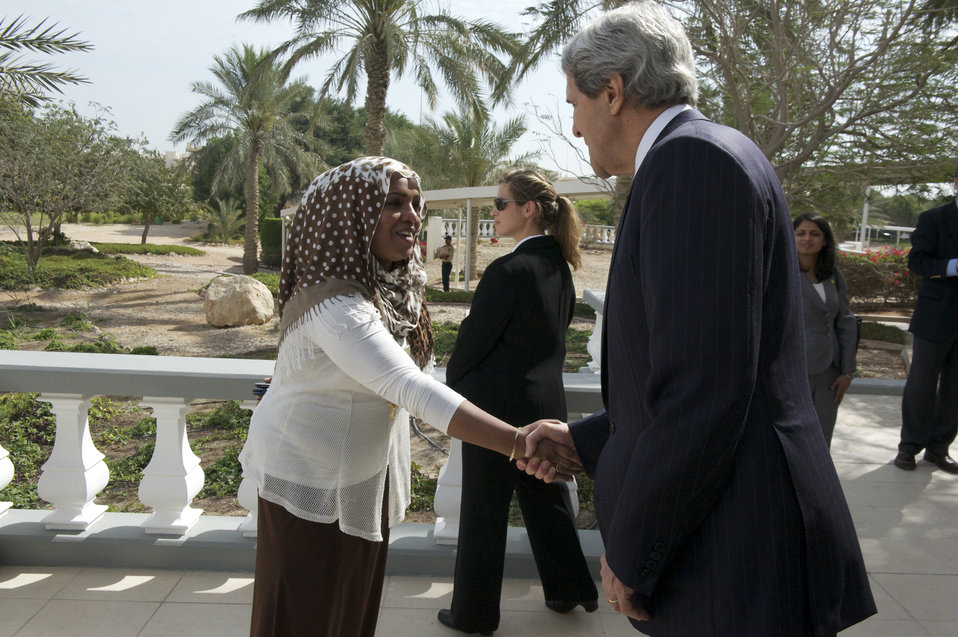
Secretary Kerry Shakes Hands With Embassy Doha Staff

U.S. Secretary of State John Kerry shakes hands with staff at the U.S. Embassy in Doha, Qatar, on March 6, 2013.